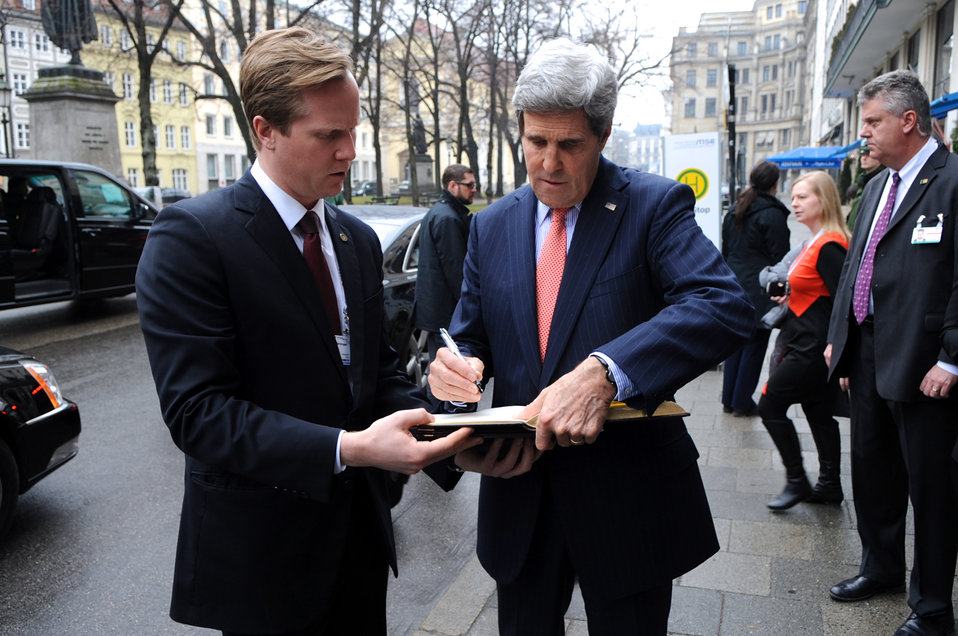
Secretary Kerry Signs Guest Book For Host Hotel of Munich Security Conference

U.S. Secretary of State John Kerry, assisted by Senior Aide Jason Meininger, signs the guest book for the Bayerischer Hof Hotel, the host site for the 50th Munich Security Conference, before departing Munich, Germany, on February 2, 2014.